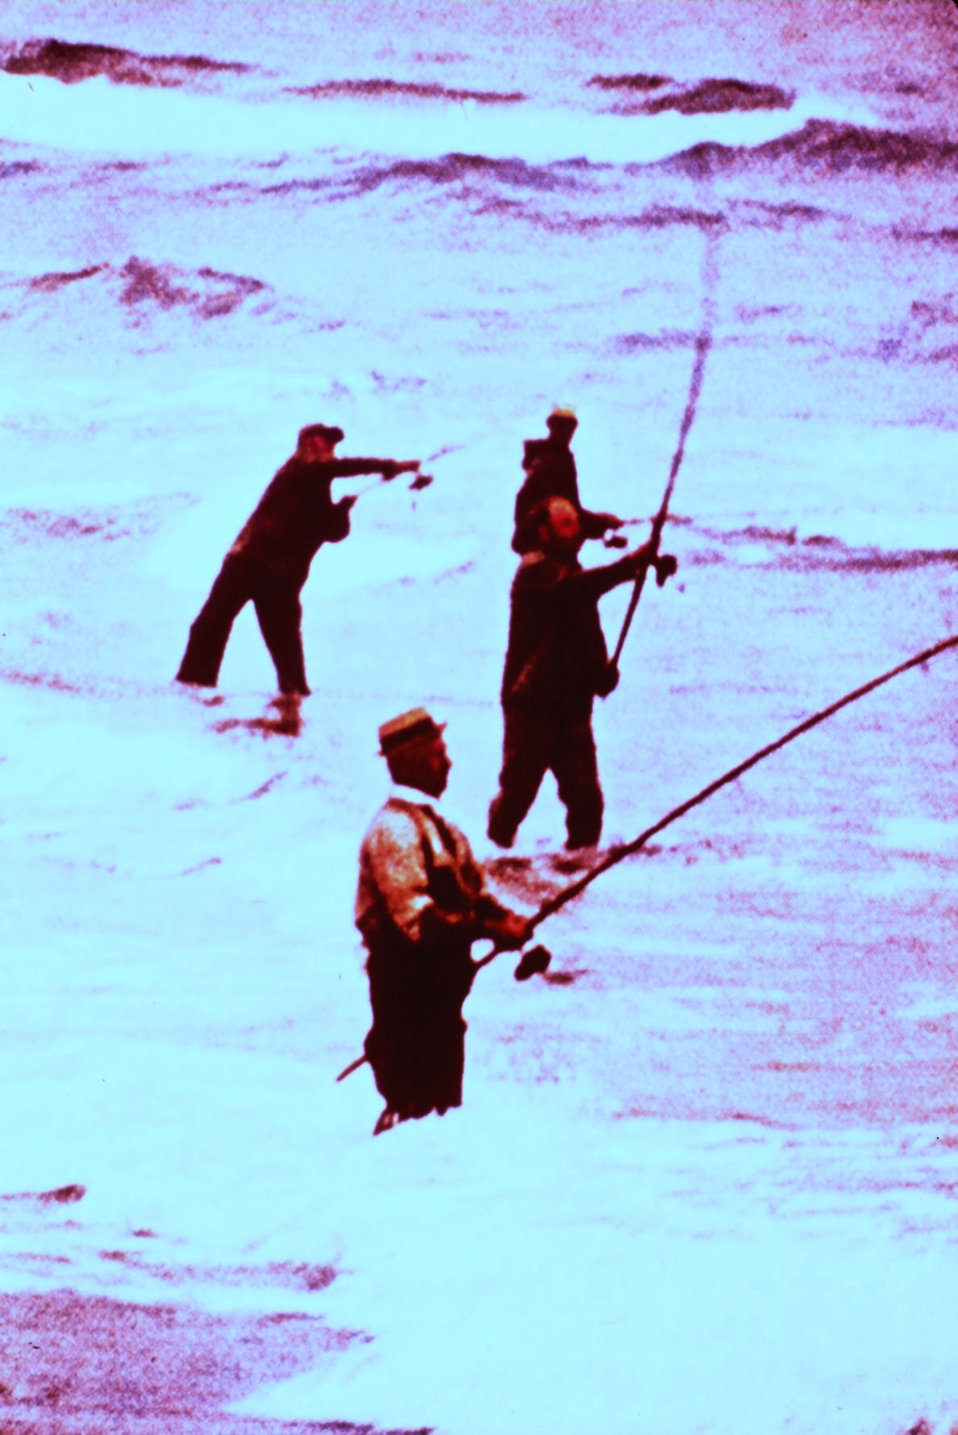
Surf fishing on the Outer Banks